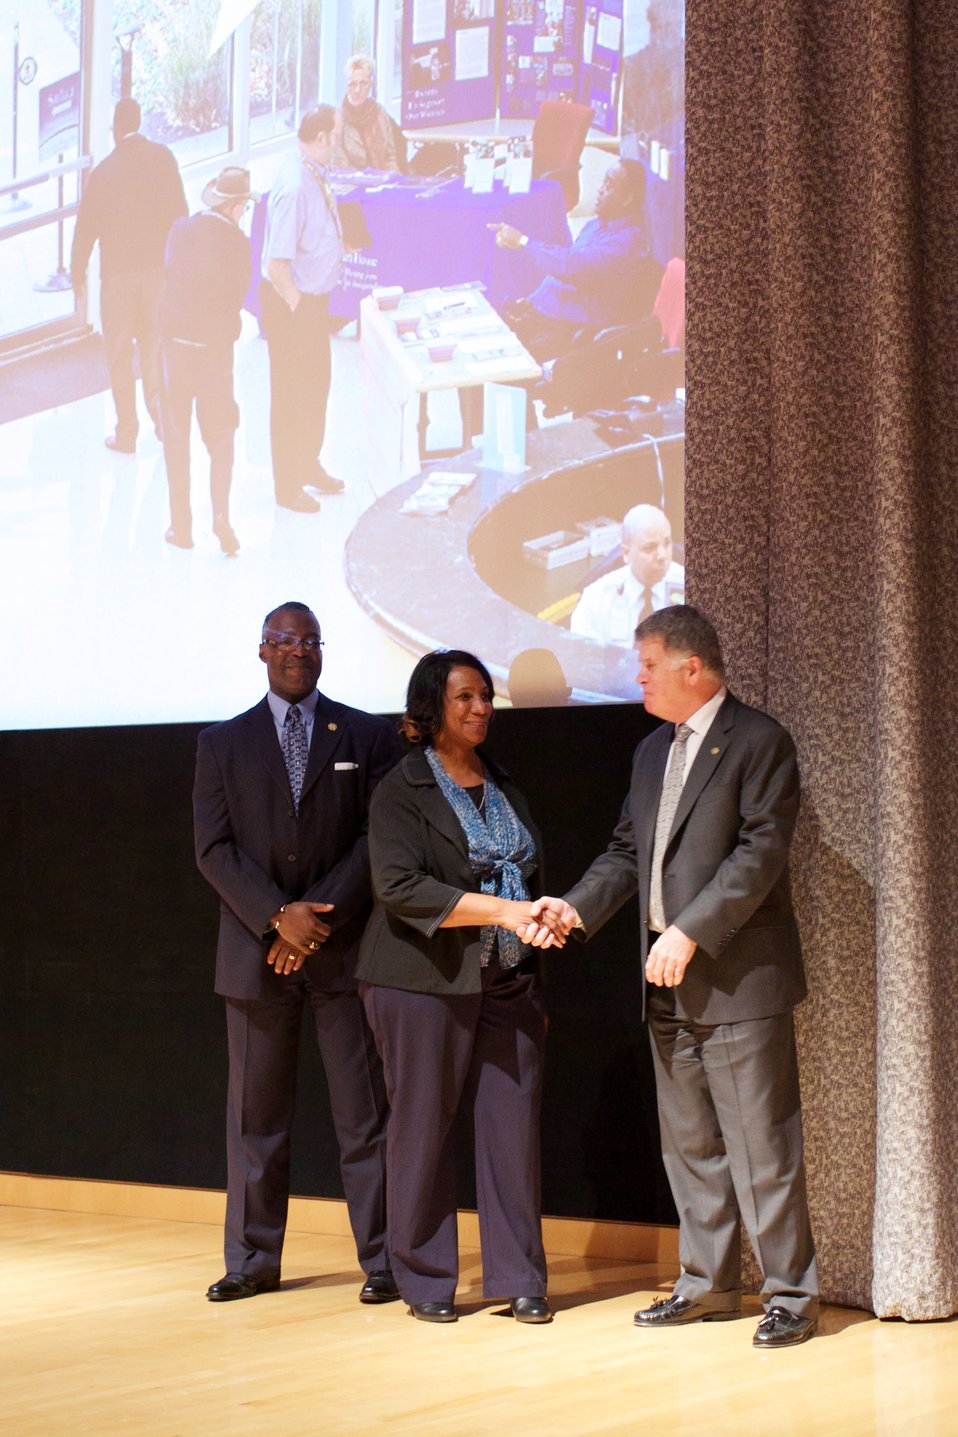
CFC Recognition Event